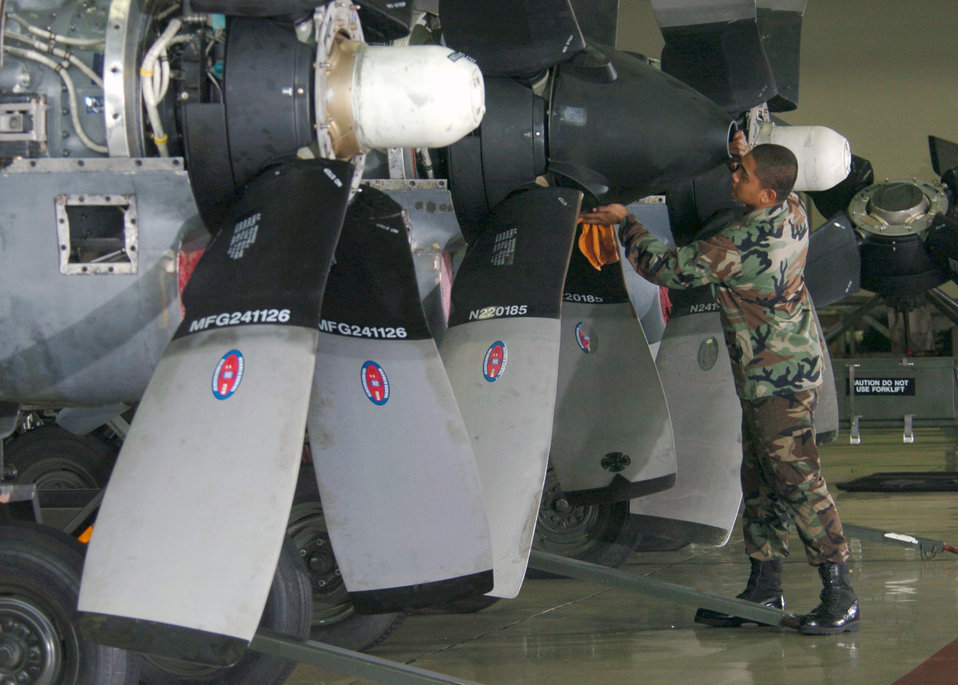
Routine checkup

YOKOTA AIR BASE, Japan -- Airman Faleni Moso installs a dome cap on a C-130 Hercules engine propeller during a routine inspection. Airman Moso is a mechanic from the 374th Maintenance Squadron and works at the T-56 Engine Regional Repair Center here. Center workers repair all C-130 cargo aircraft engines within Pacific Air Forces.